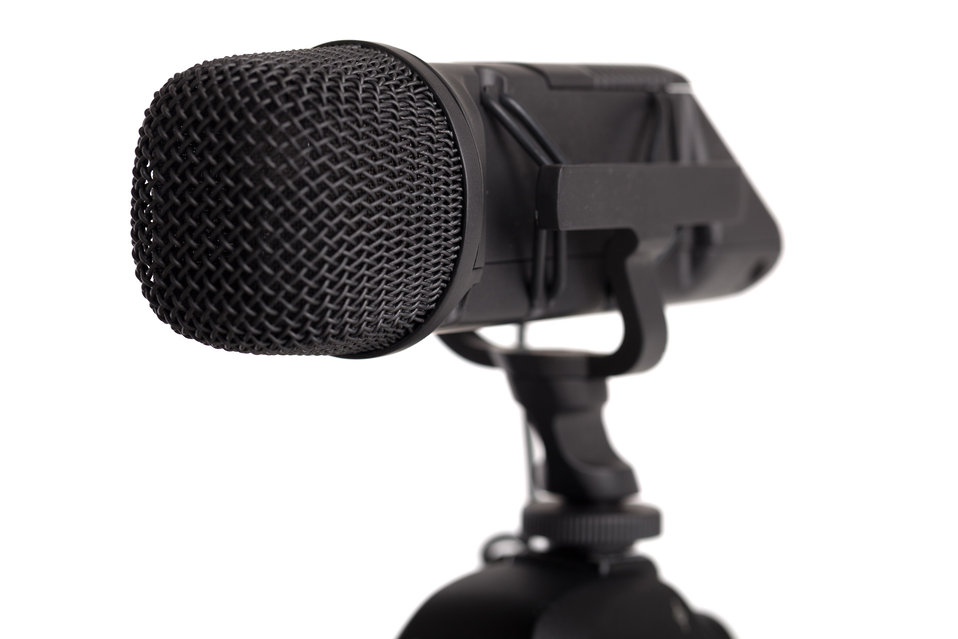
External microphone isolated on white background.